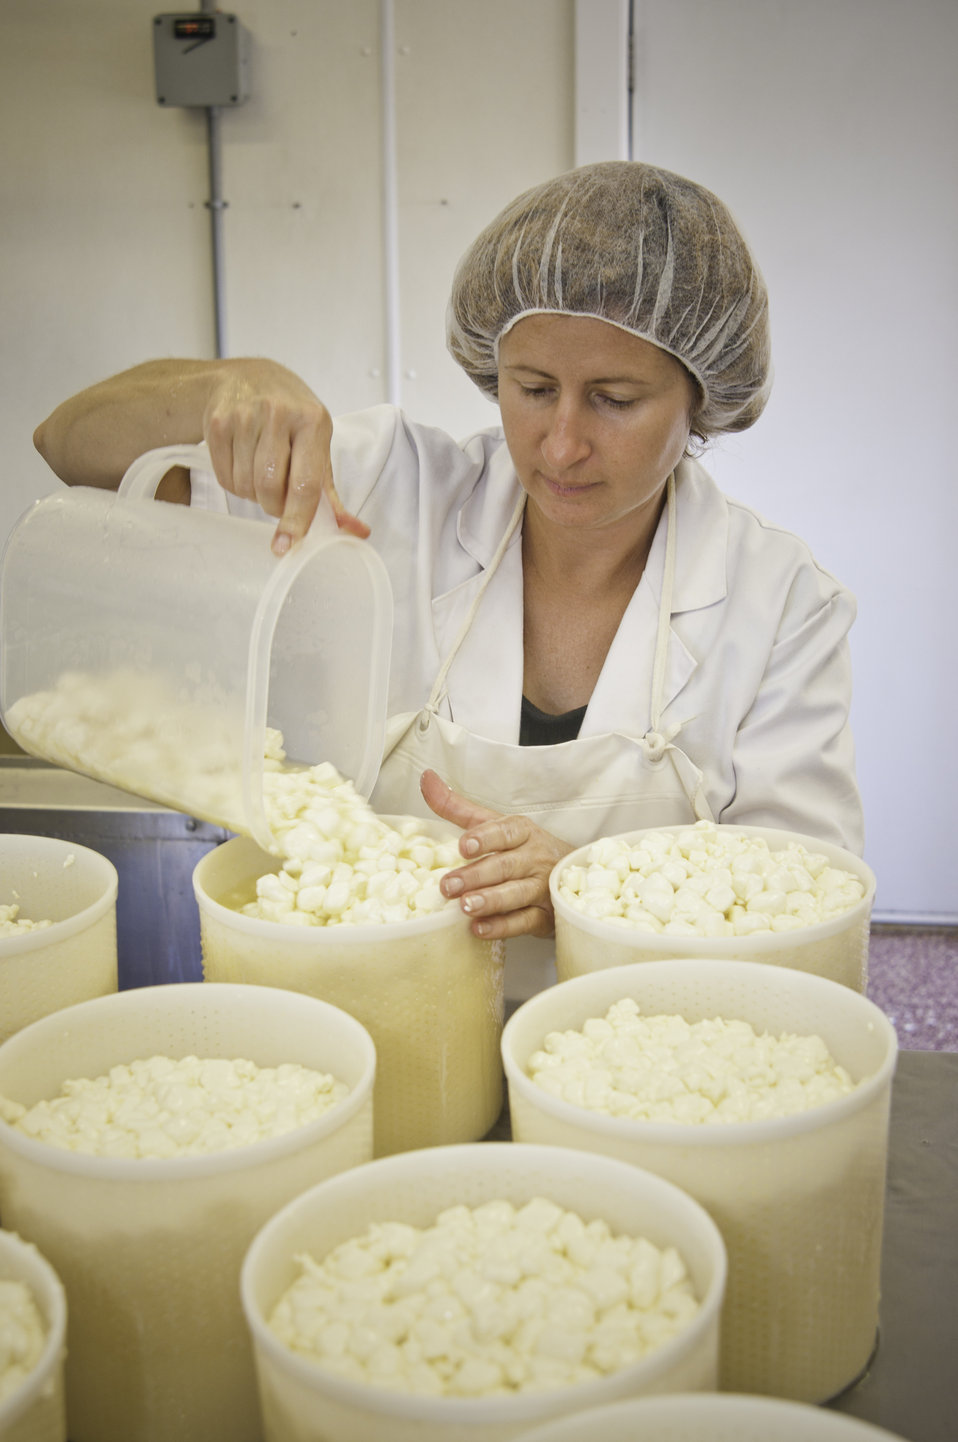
Chapel’s Country Creamery owner Holly Foster in Easton, MD pours milk curd of fresh raw milk after the milk curd has expelled the whey in the cutting process into cheese hoops called the hooping process. The curds drain in the cheese hoops for 24 hours being turned during the process until the whey has drained. Then the cheese is taken to the aging room to cure. The dairy uses fresh raw milk 12-24 hours old. The milk is all-natural and contains no synthetic hormones, antibiotics, or chemical compounds. The 1150 pounds of milk in the vat will be used to make the dairy’s “Bay Blue” Cheese.